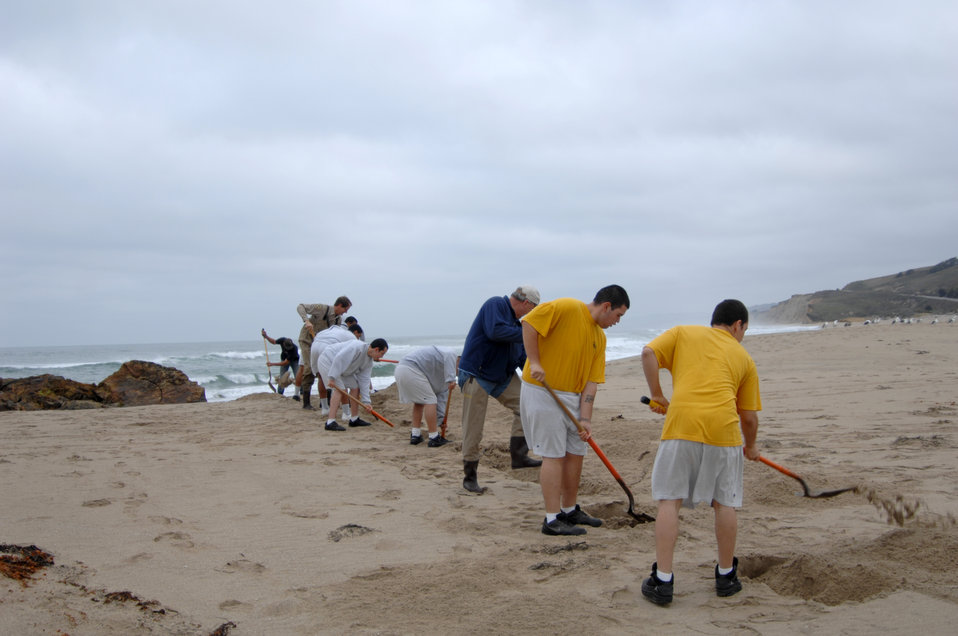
Pescadero Breach 4